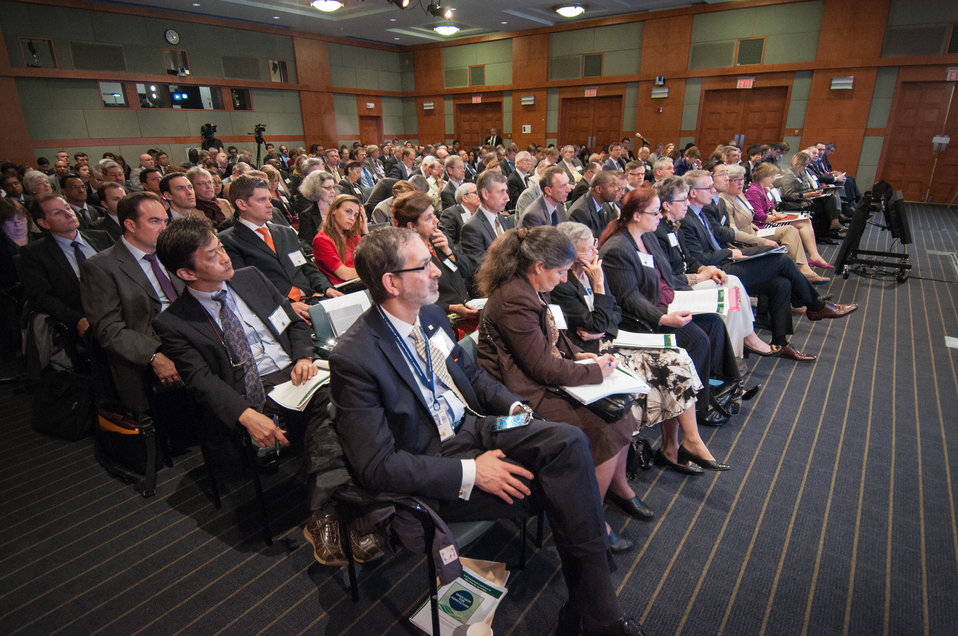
Participants in the G-8 International Conference on Open Data for Agriculture listen to opening remarks by Agriculture Secretary Tom Vilsack in Washington, D.C. on Monday, Apr. 29, 2013. The conference launched a new 'virtual community' of Food, Agriculture, and Rural data on Data.gov-the U.S. Government's data sharing website-to catalogue America's publicly available agricultural data and increase the ability of the public to find, download, and use datasets that are generated and held by the Federal Government. The data community features a collection of more than 300 newly cataloged datasets, databases, and raw data sources related to food, agriculture, and rural issues from agencies across the U.S. Government. In addition to the data catalog, the virtual community shares a number of applications, maps and tools designed to help farmers, scientists and policymakers improve global food security and nutrition.